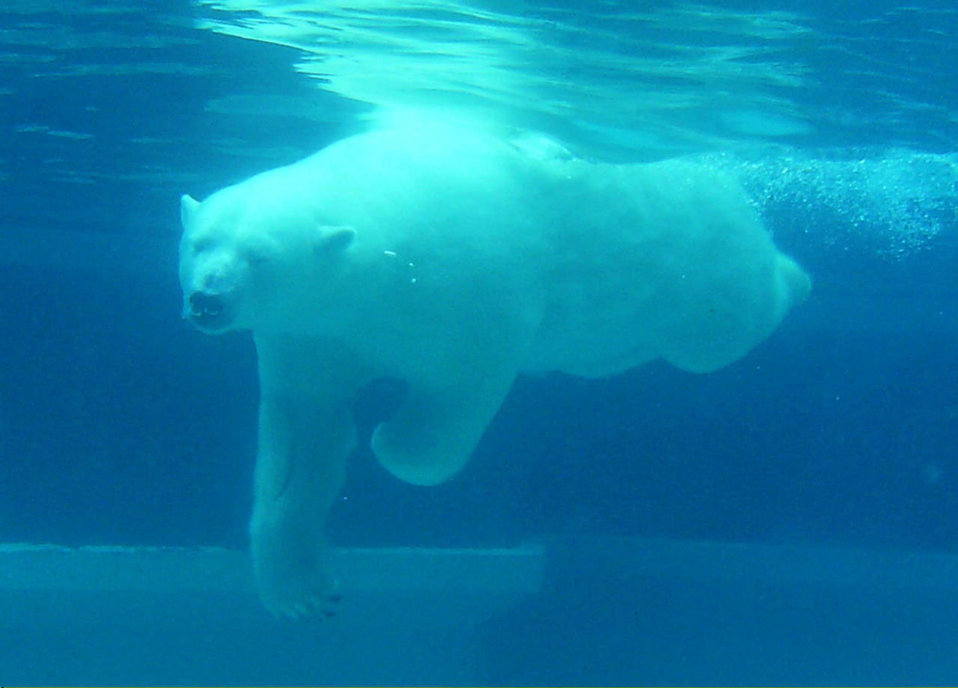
Polar bear swimming

Photographed through the glass wall of the polar bear exibit at lincoln park zoo, chicago.